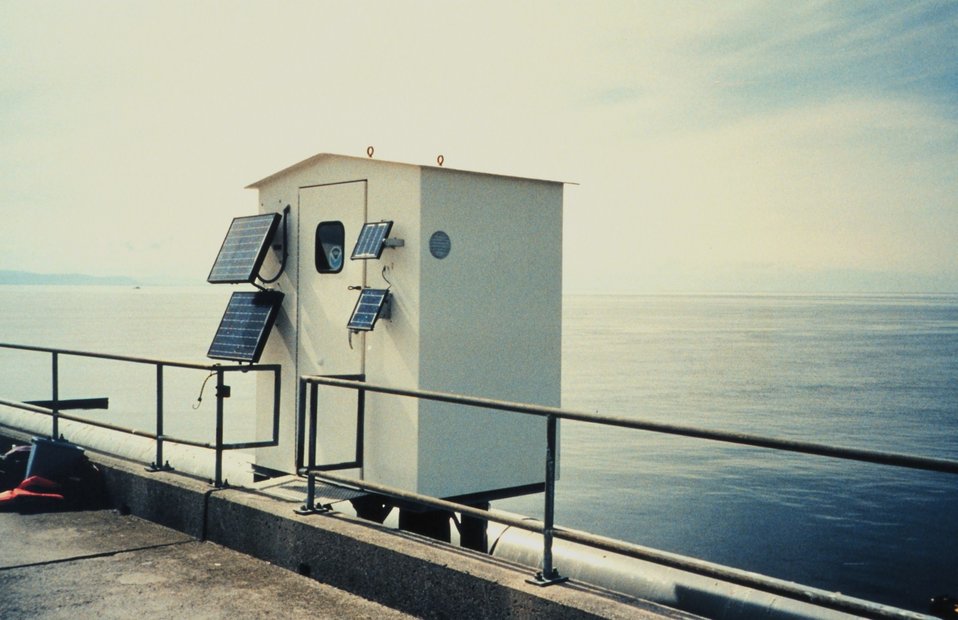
The tide house which houses an A.I.&NXG tide gage installation.